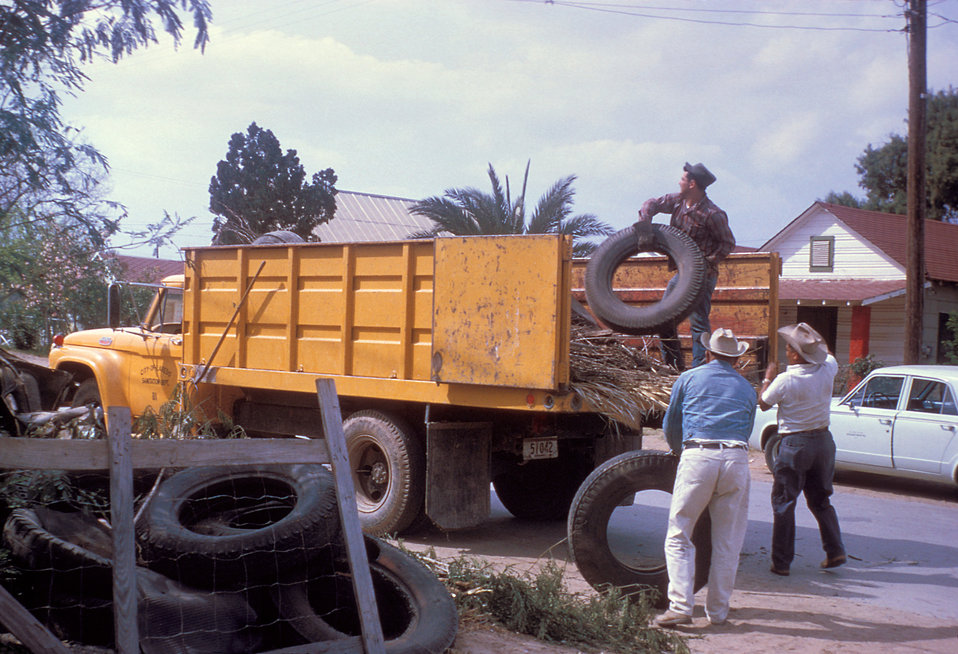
Removing tires as potential mosquito breeding sites.